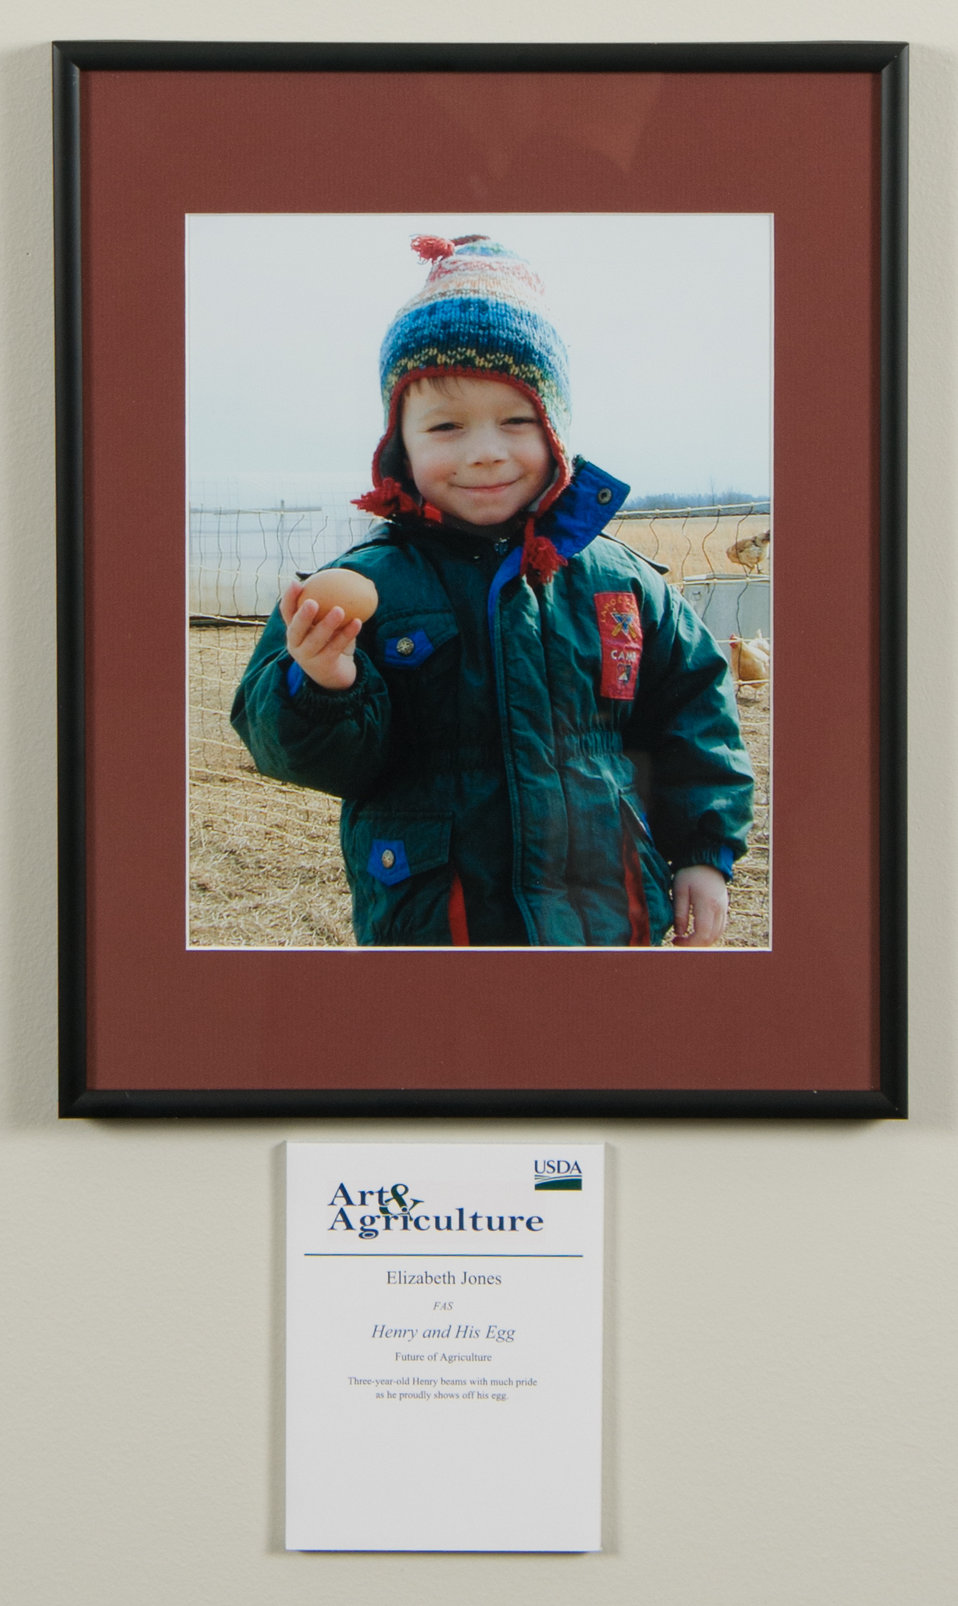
Online Viewer's Choice entries of the 2013 Art & Agriculture, Tuesday, July 9, 2013, in the South Building, Washington, D.C. Themes were expressed by employees from across the department and the contest was open to full-time and part-time USDA employees. Winning artwork will be displayed till the end of the year. U.S. Artistic expression is a creative outlet that is vital for an individual to grow and develop.